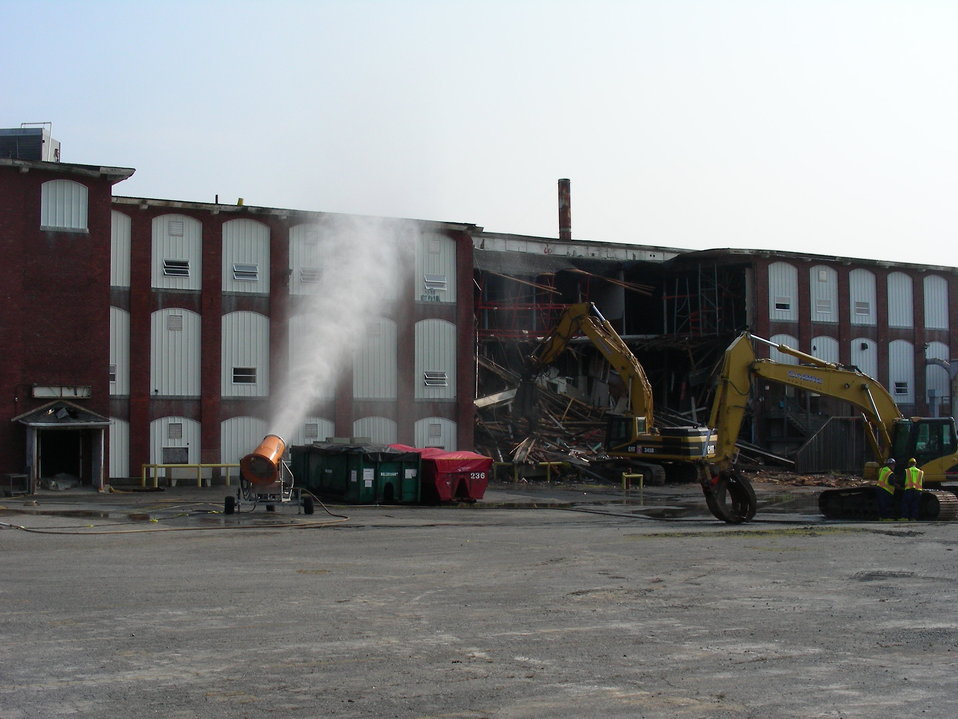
July 20, 2011 Day 1 of the Aerovox Demolition

A machine called the 'Dust Boss' sprays water into the immediate work zone to minimize dust for the protection of workers and the surrounding communities.

Daily project updates available @ twitter.com/#!/EPAaerovox